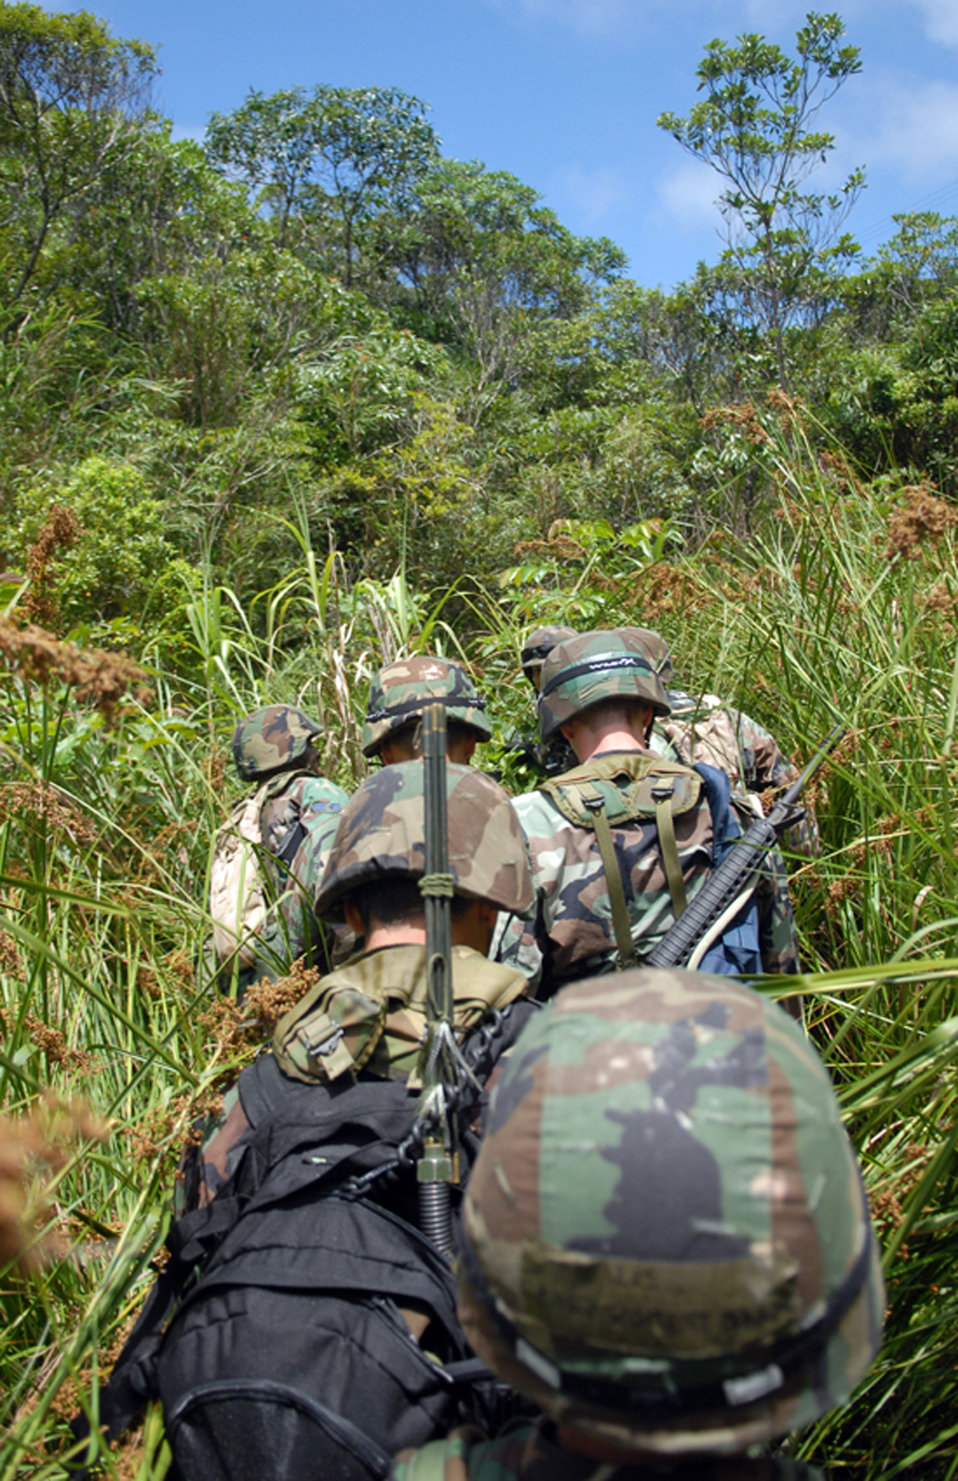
Jungle warfare training

A team from the 18th Communications Squadron at Kadena Air Base, Japan, finds out firsthand how thick the jungle is during Marine jungle warfare training at Camp Gonsalves, Okinawa, on July 25. Thirty Airmen from the 18th CS attended the weeklong course, which included land navigation and other skills, culminating in an endurance course on the final day. The 18th CS is the first non-combat support unit to go through this training.